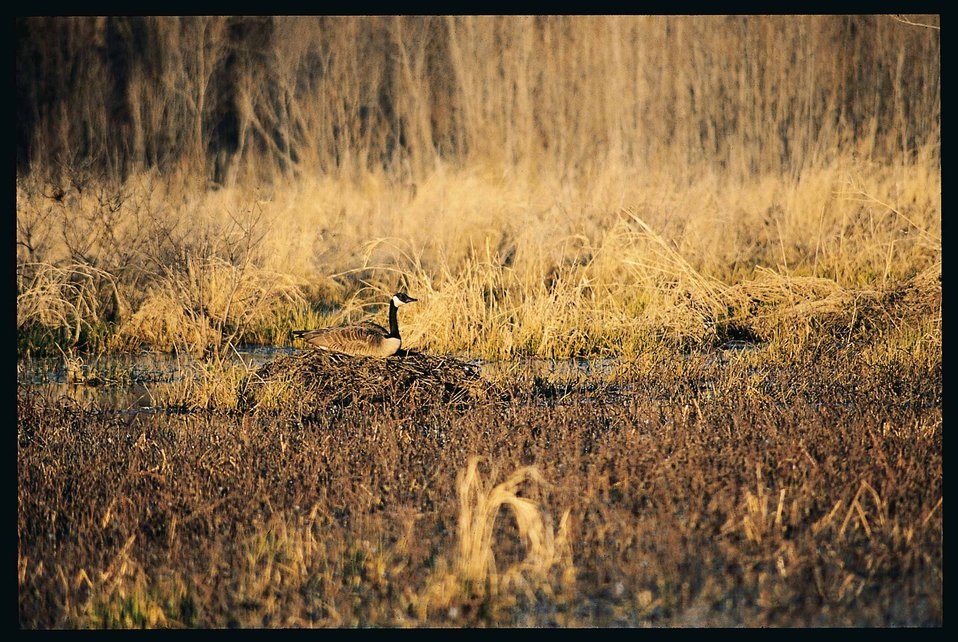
Habitat for ducks and geese on a restored wetland in Van Buren County, Iowa.